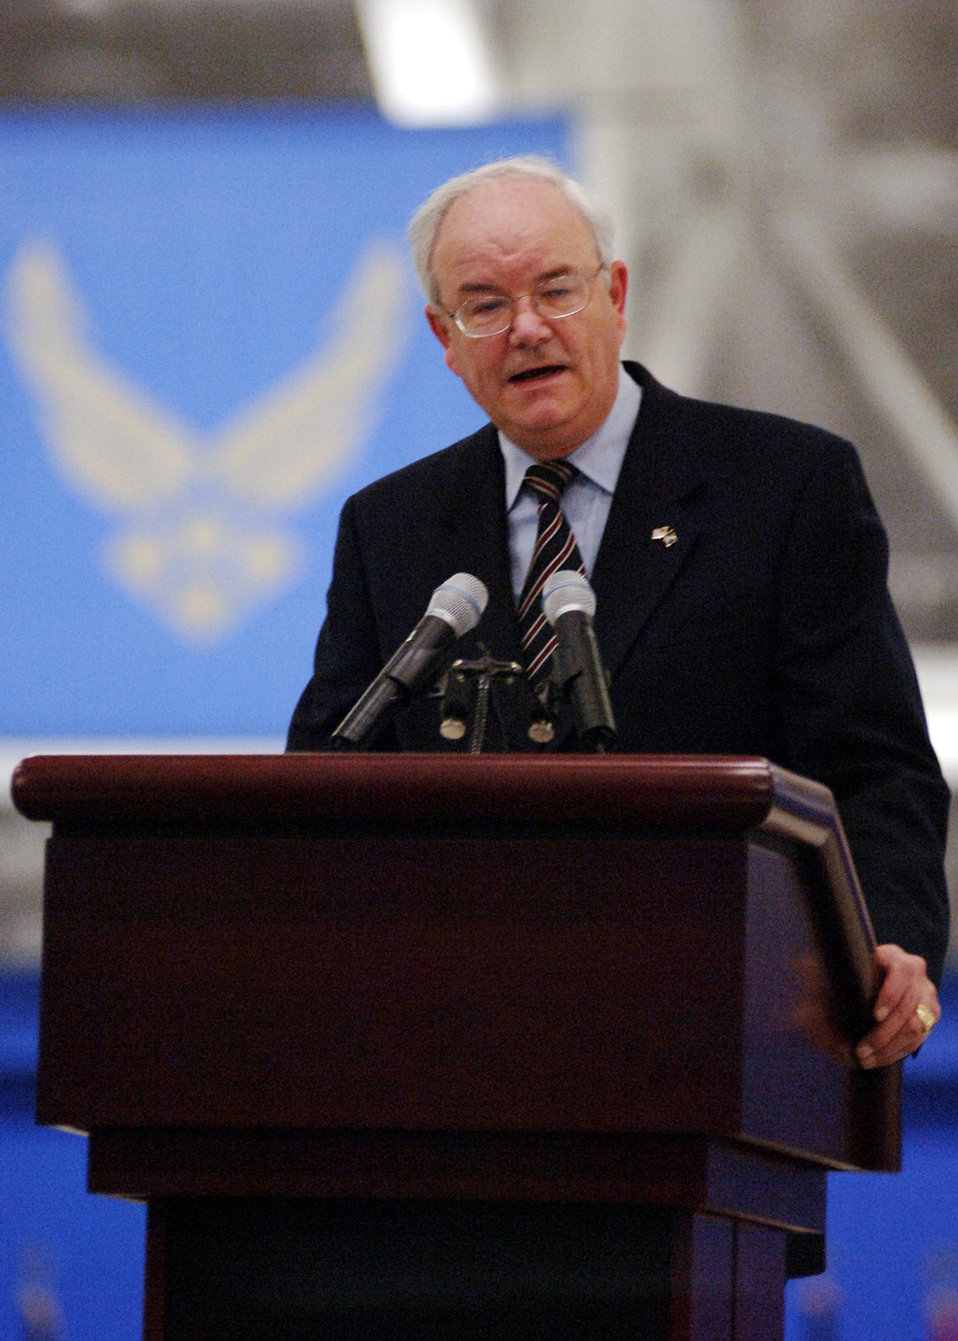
SECAF celebrates welcome to the blue

ANDREWS AIR FORCE BASE, Md. (AFPN) -- Secretary of the Air Force Michael W. Wynne is